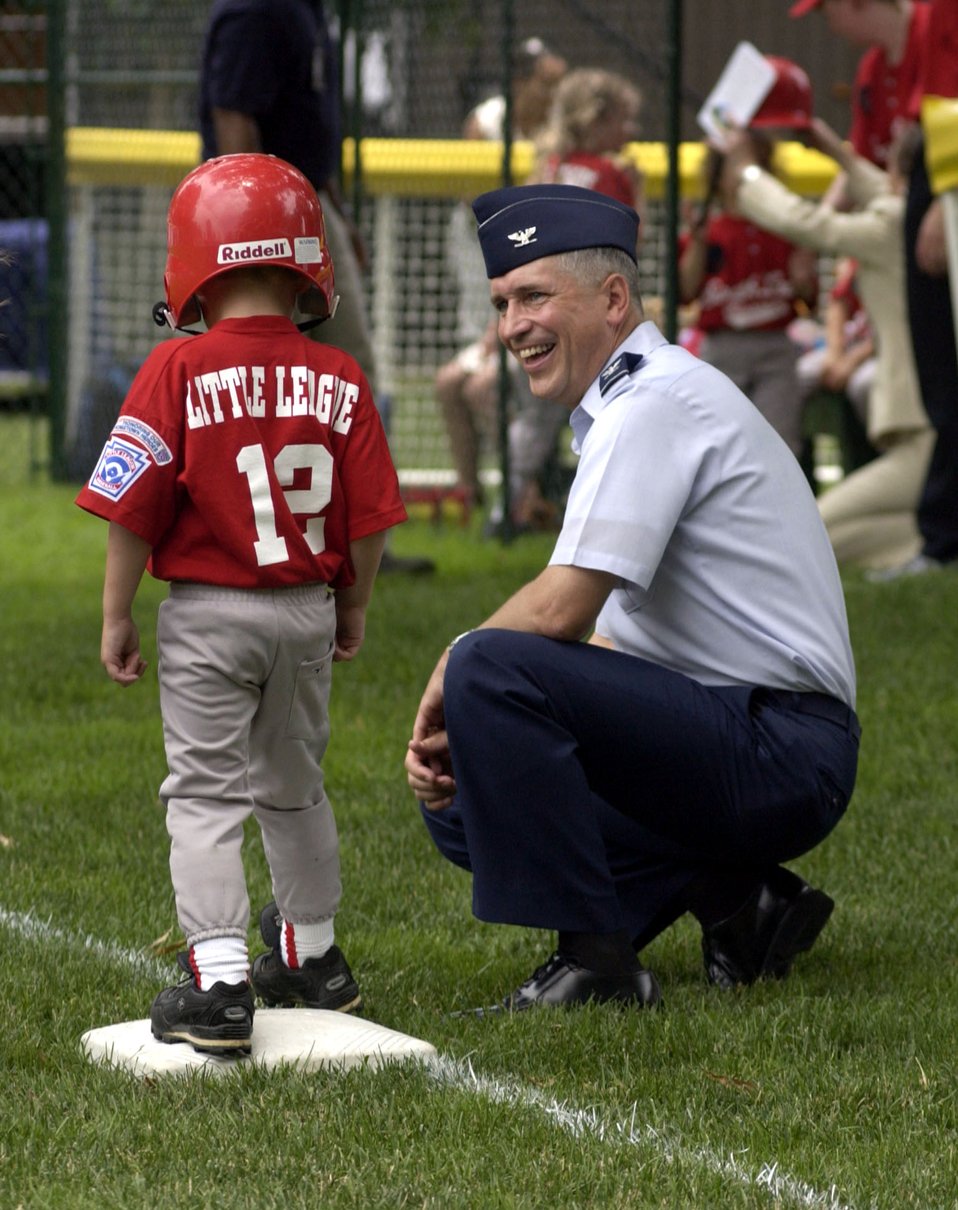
Tee ball on the South Lawn

Col. Frederick Martin talks with 4-year-old Alex McPeak at third base during a game on the South Lawn of the White House on Friday, June 23, that marks the official start of the Little League Season. Alex's mother, Danielle, is the coach of the Yankees team from McGuire Air Force Base, N.J. His father, Master Sgt. Todd McPeak, is deployed. Colonel Martin, assigned at McGuire, served as the third base coach for both the McGuire team and the Dolcom Little League Indians from Naval Submarine Base New London in Groton, Conn.